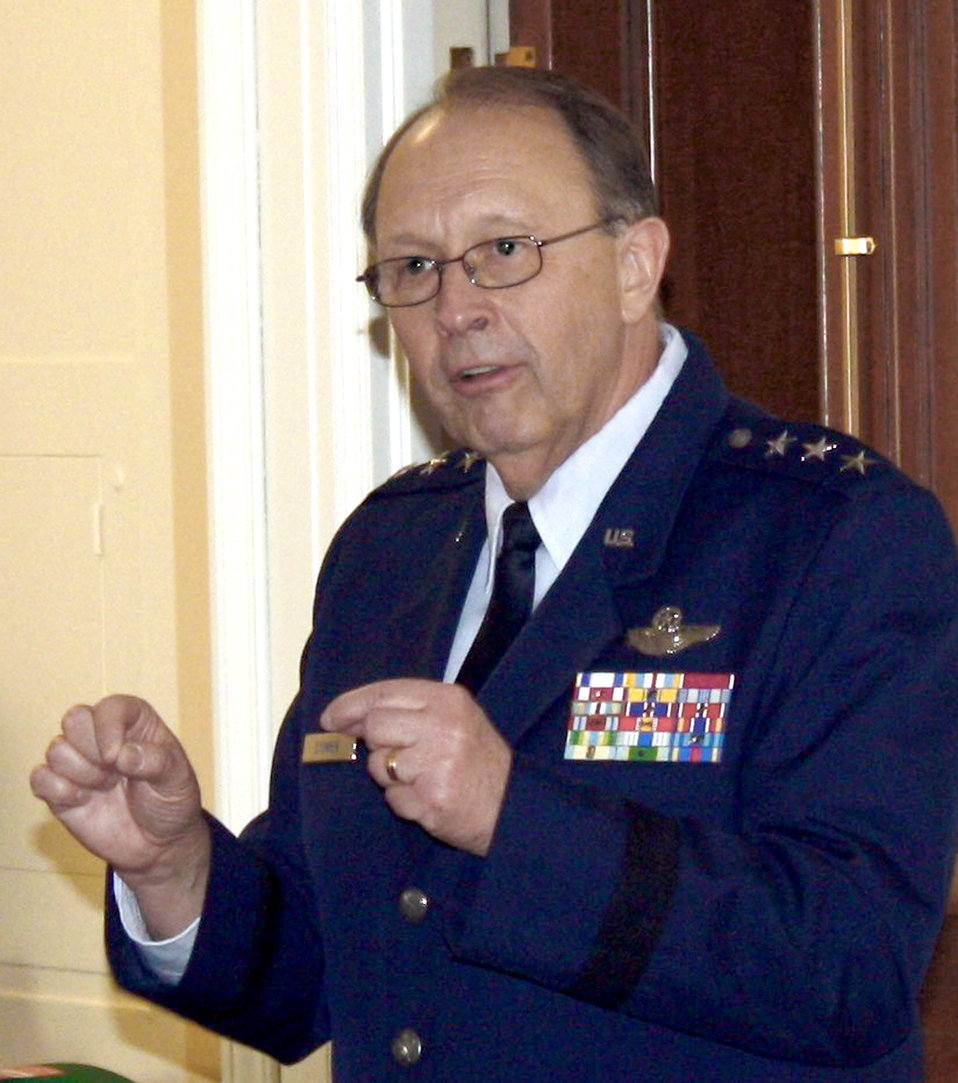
AF Reserve legislative goals presented on Capitol Hill

Lt. Gen. Charles E. Stenner Jr. addressed more than 60 congressional staffers and military liaison officers Feb. 25, 2011, in Washington.